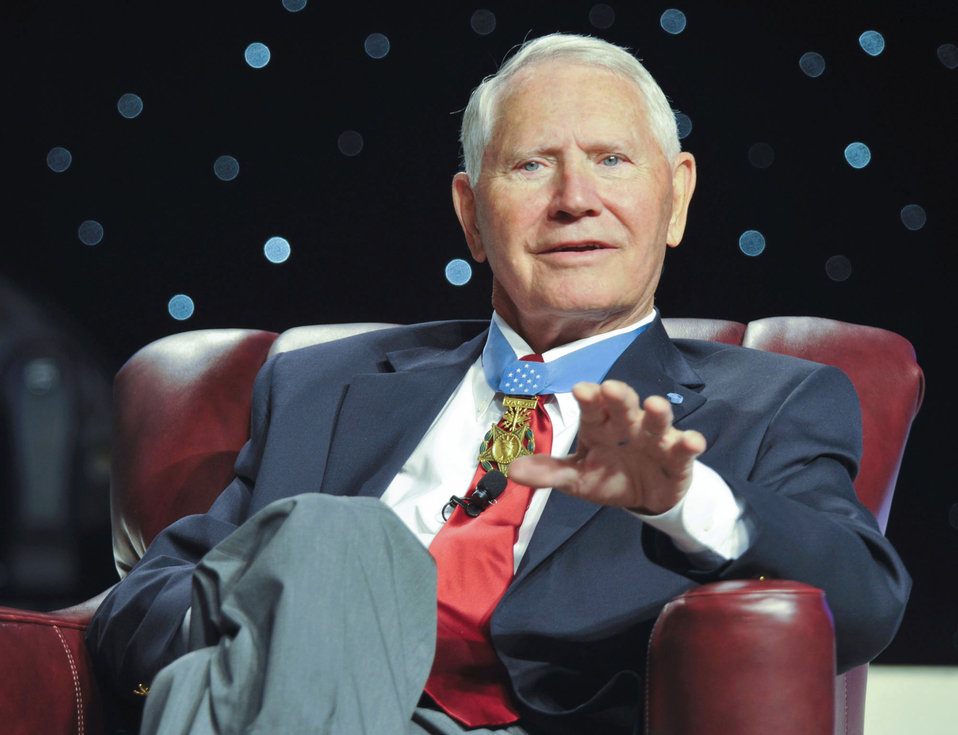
Medal of Honor recipients

Retired Col. Leo Thorsness, a Medal of Honor recipient, participated in a question and answer session Sept. 15, 2010, at the Air Force Association annual Air and Space Conference and Technology Exposition at National Harbor, in Oxon Hill, Md. Colonel Thorsness spent six years as a prisoner of war in North Vietnam.